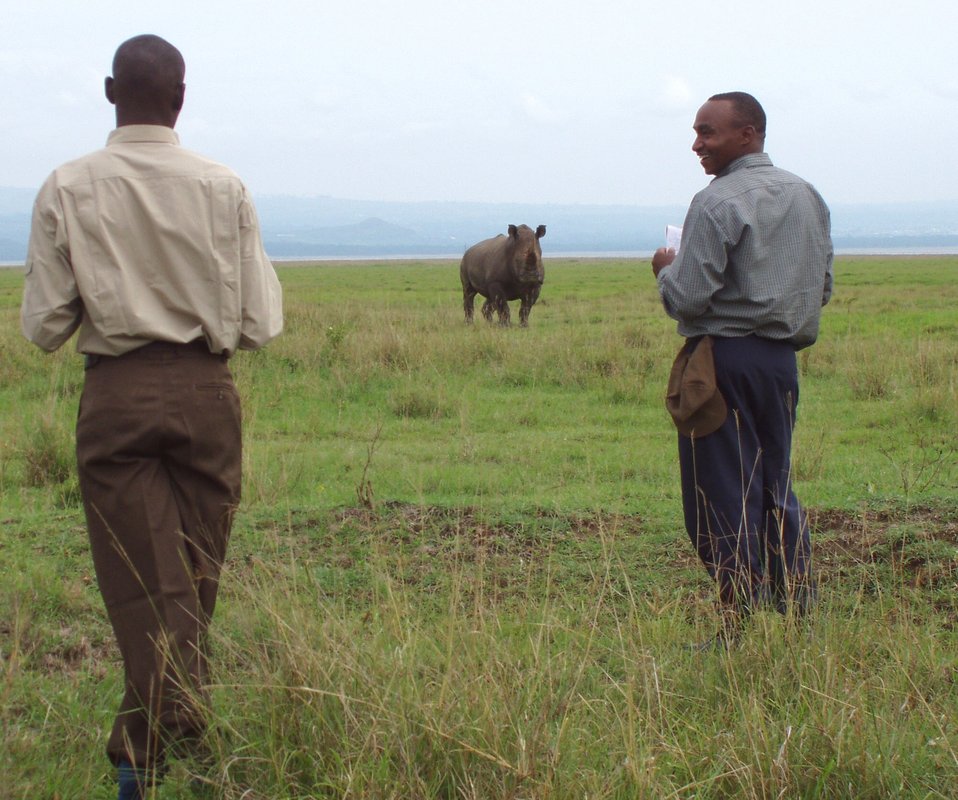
White rhino monitoring

Nakuru National Park, Kenya